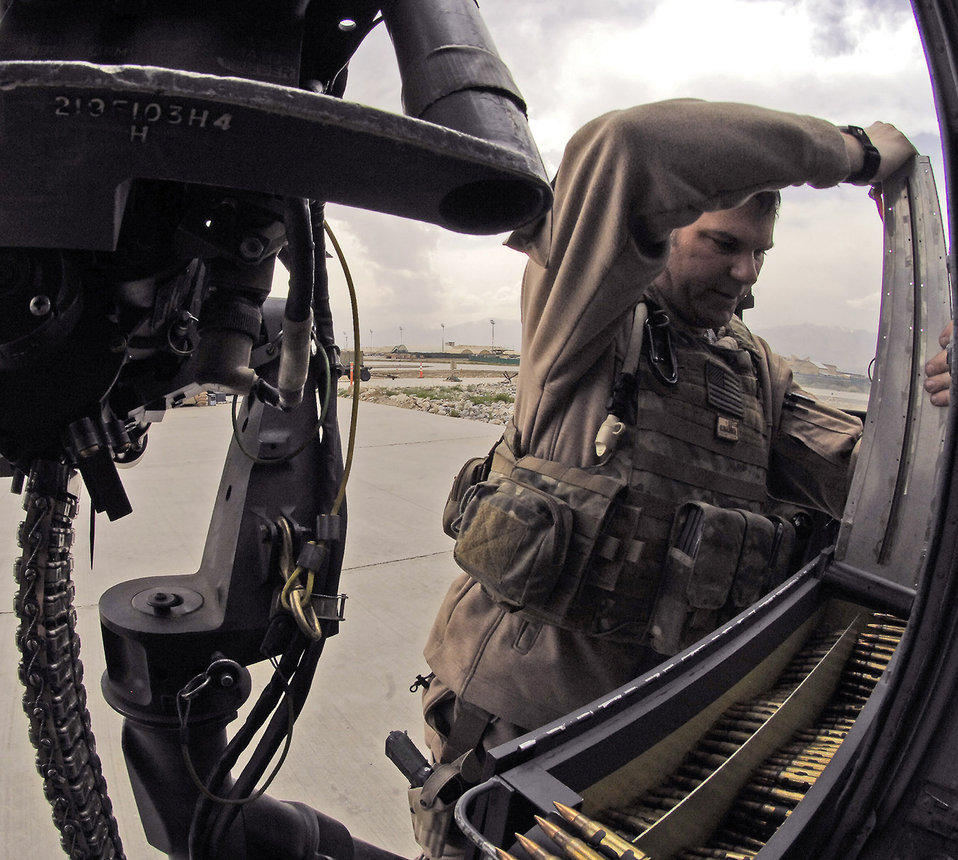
New York Guardsmen stay on alert to save lives

Senior Master Sgt. Glen Berg loads his rail gun on the HH-60 Pave Hawk before taking off on a training mission April 20 at Bagram Airfield, Afghanistan. Sergeant Berg is a 101st Expeditionary Rescue Squadron aerial gunner.